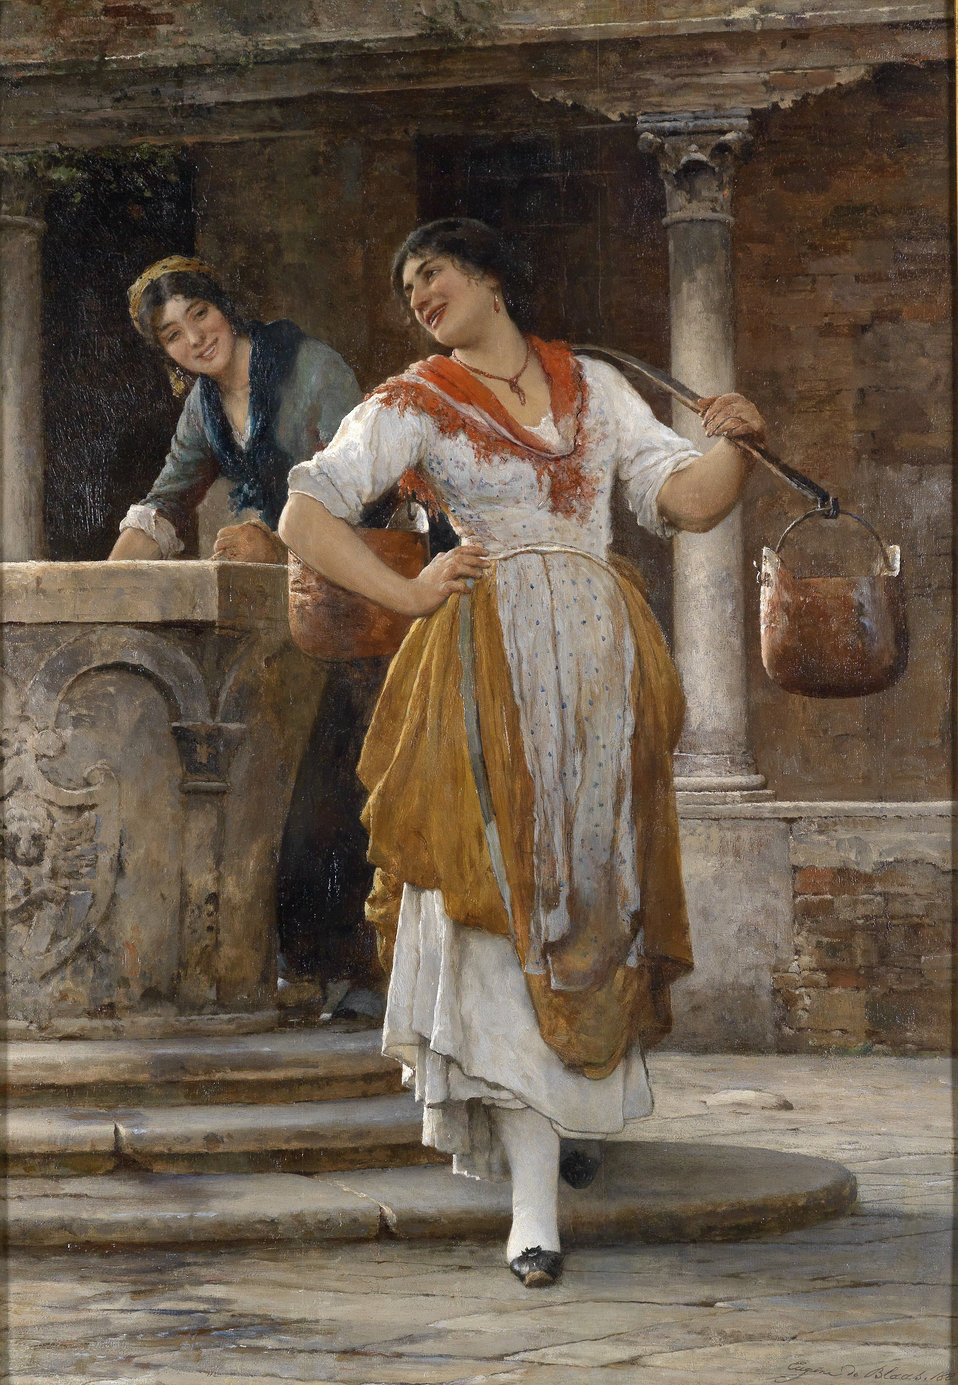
Die Wasserträgerin, signiert, datiert Eugene De Blaas 188(7), Öl auf Holz auf Holz, 67,3 x 47,6 cm